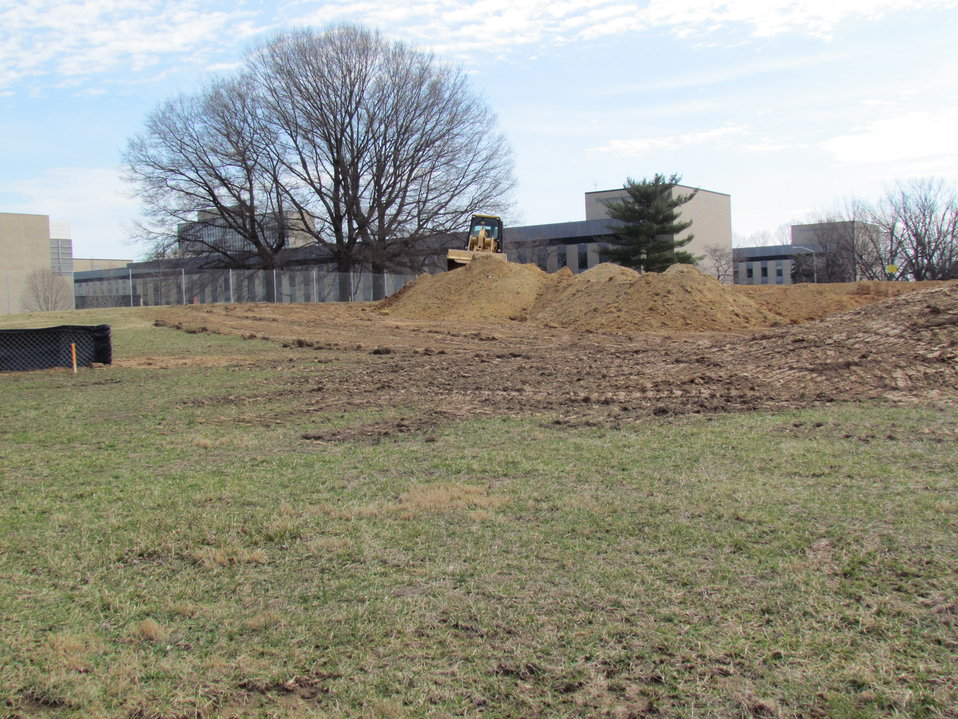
Site of Net-Zero Energy Residential Test Facility on NIST Gaithersburg Campus - Looking towards Building 226.